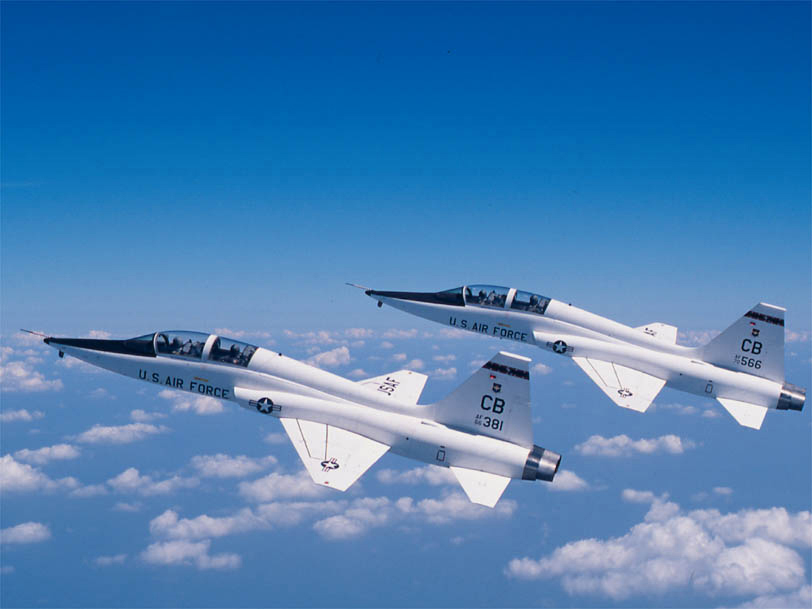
Training Talons

FILE PHOTO -- The T-38 Talon is a twin-engine, high-altitude, supersonic jet trainer used in a variety of roles because of its design, economy of operations, ease of maintenance, high performance and exceptional safety record. It is used primarily by Air Education and Training Command for undergraduate pilot and pilot instructor training. Air Combat Command, Air Mobility Command and the National Aeronautics and Space Administration also use the T-38 in various roles.